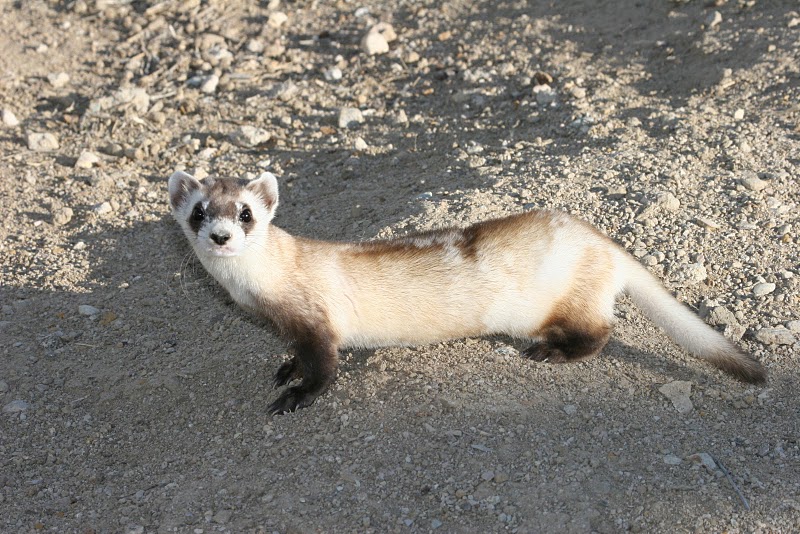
Black-footed Ferret